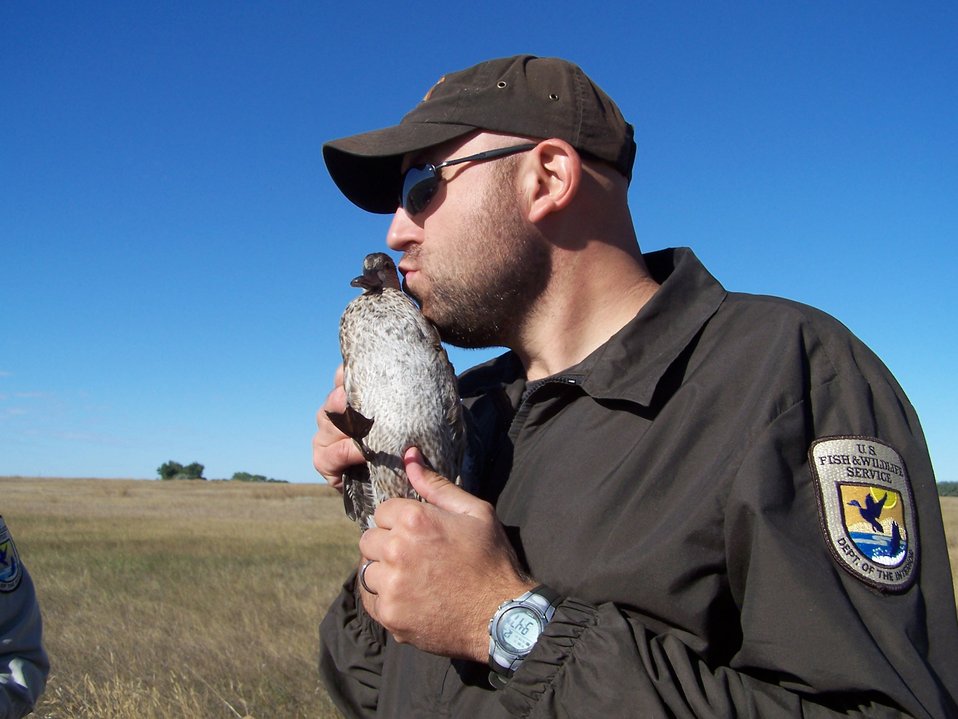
Bird Banding at Bowdoin NWR

Blue-winged teal in line to be banded, getting some love from Refuge staff for being patient while waiting.